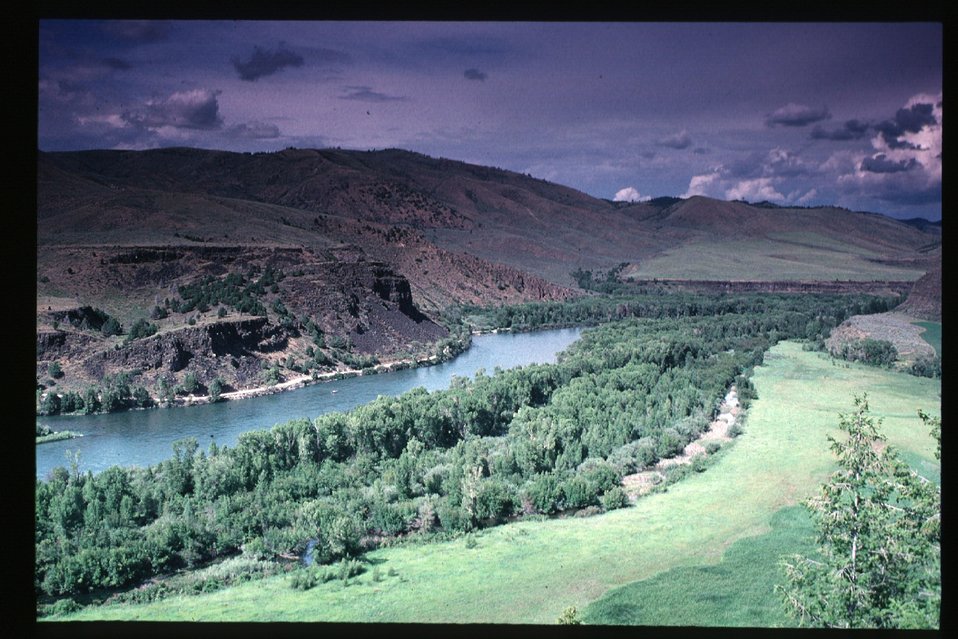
South Fork of Snake River USRD Upper Snake River District